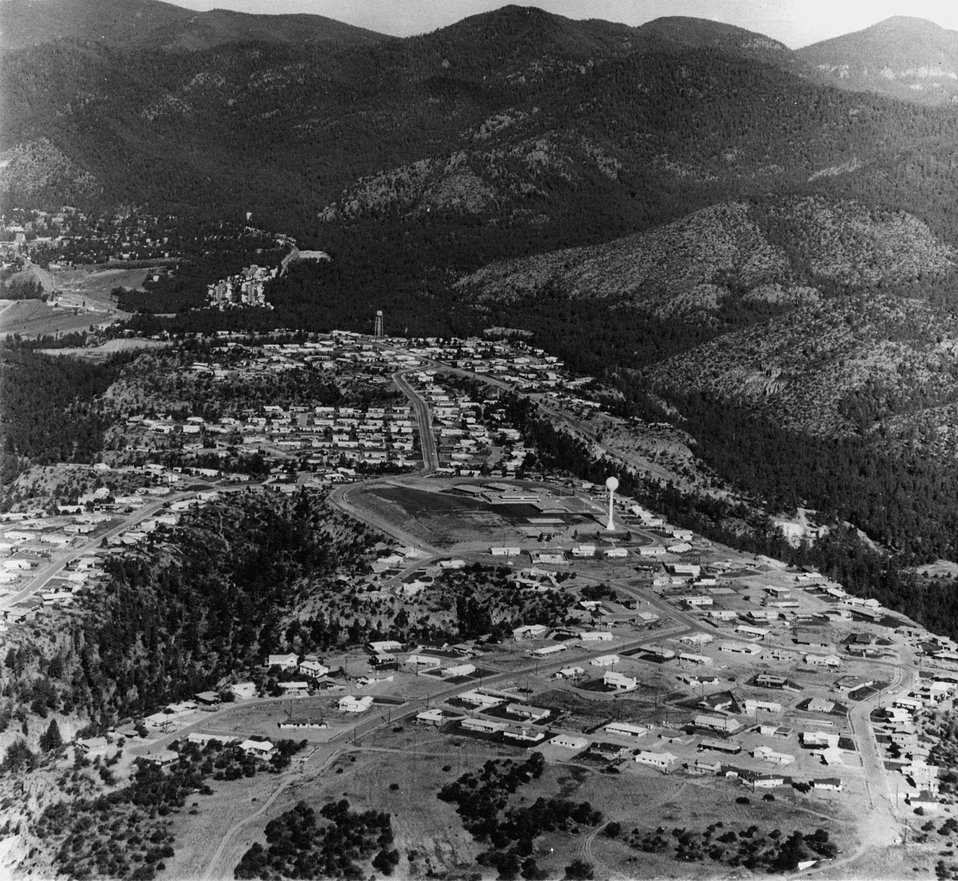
An aerial view of Barranca Mesa and the private homes that have been constructed there on land sold by the government. c. 1968